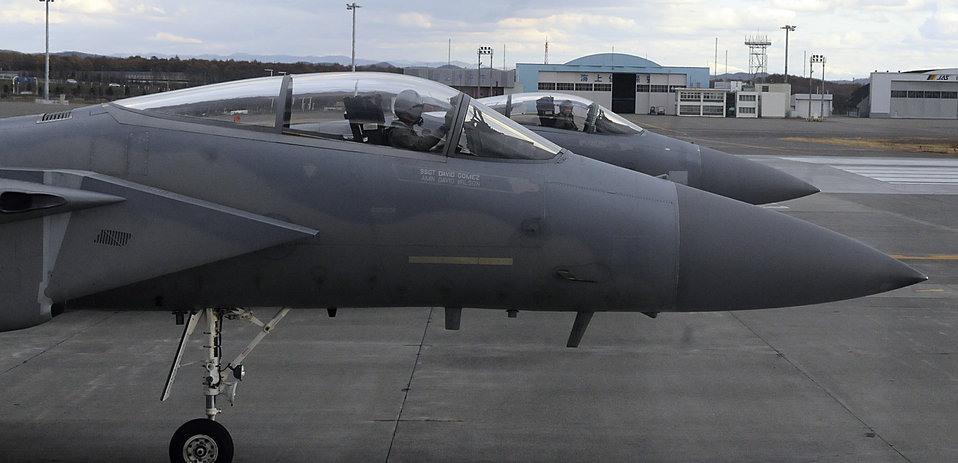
Kadena ATR

Capt. Tim Wegner and 1st Lt. Aaron Stevens wait on the end of runway for weapons crews to complete their final checks on an F-15 Eagle Nov. 17, 2001, at Chitose Air Base, Japan. The jets